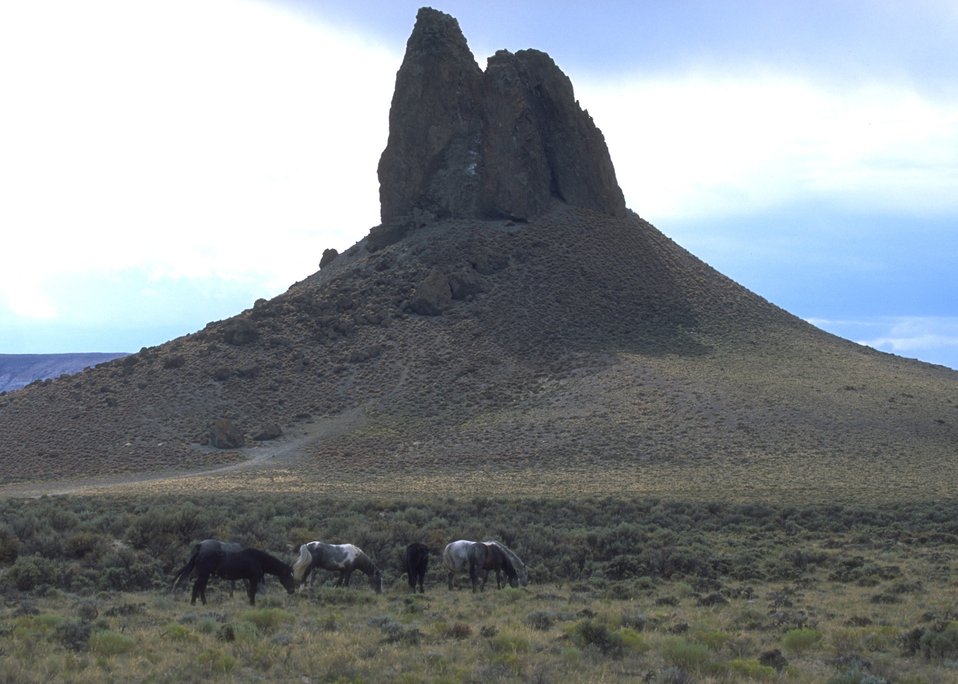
Wild Horses and Boar's Tusk, Rock Springs Field Office.